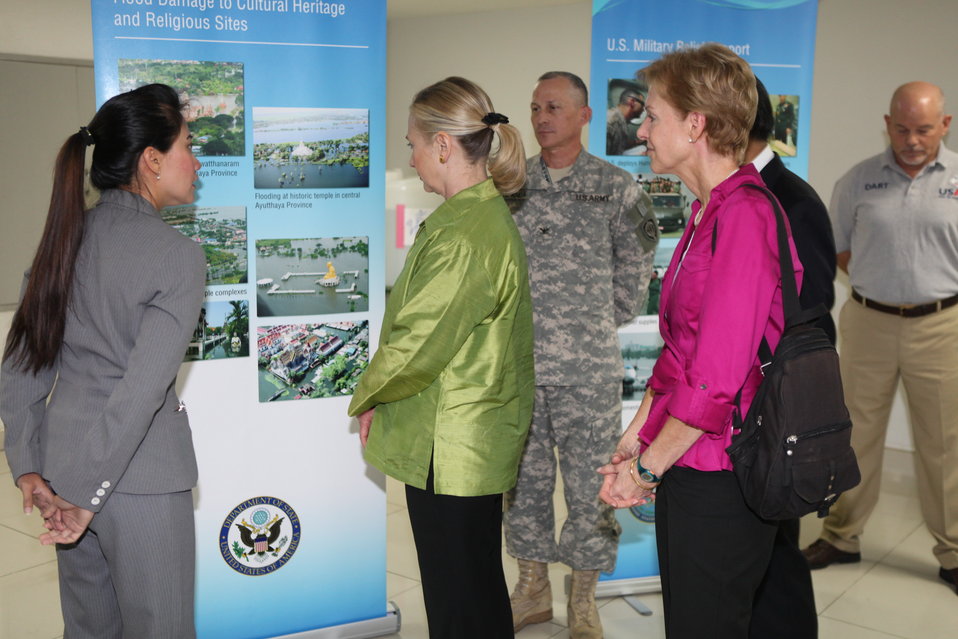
Secretary Clinton, With Ambassador Kenney, Looks at a Presentation of Flood Damage

U.S. Secretary of State Hillary Rodham Clinton, center, with U.S. Ambassador to Thailand Kristie Kenney, right, looks at a presentation of the flood damage in Thailand and U.S. flood assistance at a temporary evacuation site at the Sports Center Rajamangala Stadium in Bangkok, Thailand, on November 17, 2011.